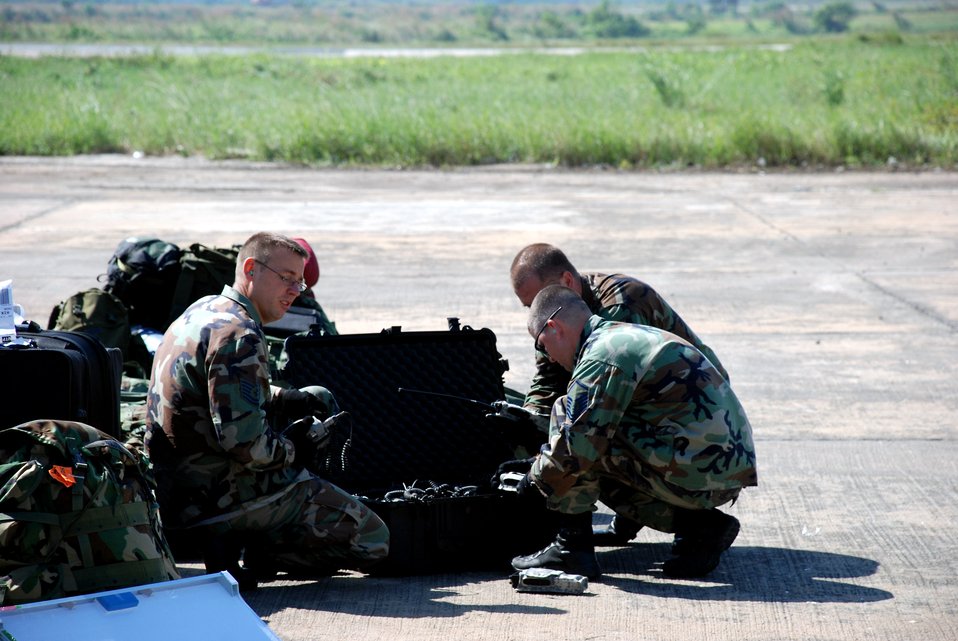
Air Force aid arrives in Bangladesh

Three Airmen work to establish a communications system Nov. 26 at Zia International Airport in Dhaka, Bangladesh. The Airmen are part of a 37-person team from the 36th Contingency Response Group at Andersen Air Force Base, Guam, and are tasked to establish relief supply transload operations in the wake of a Nov. 15 tropical cyclone that devastated much of the southern part of the country.The 13th Air Force-led mission employed a C-17 Globemaster III from Hickam AFB, Hawaii, to bring the Airmen to Bangladesh.